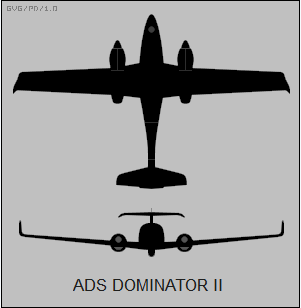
Three-view of the ADS Dominator II UAV